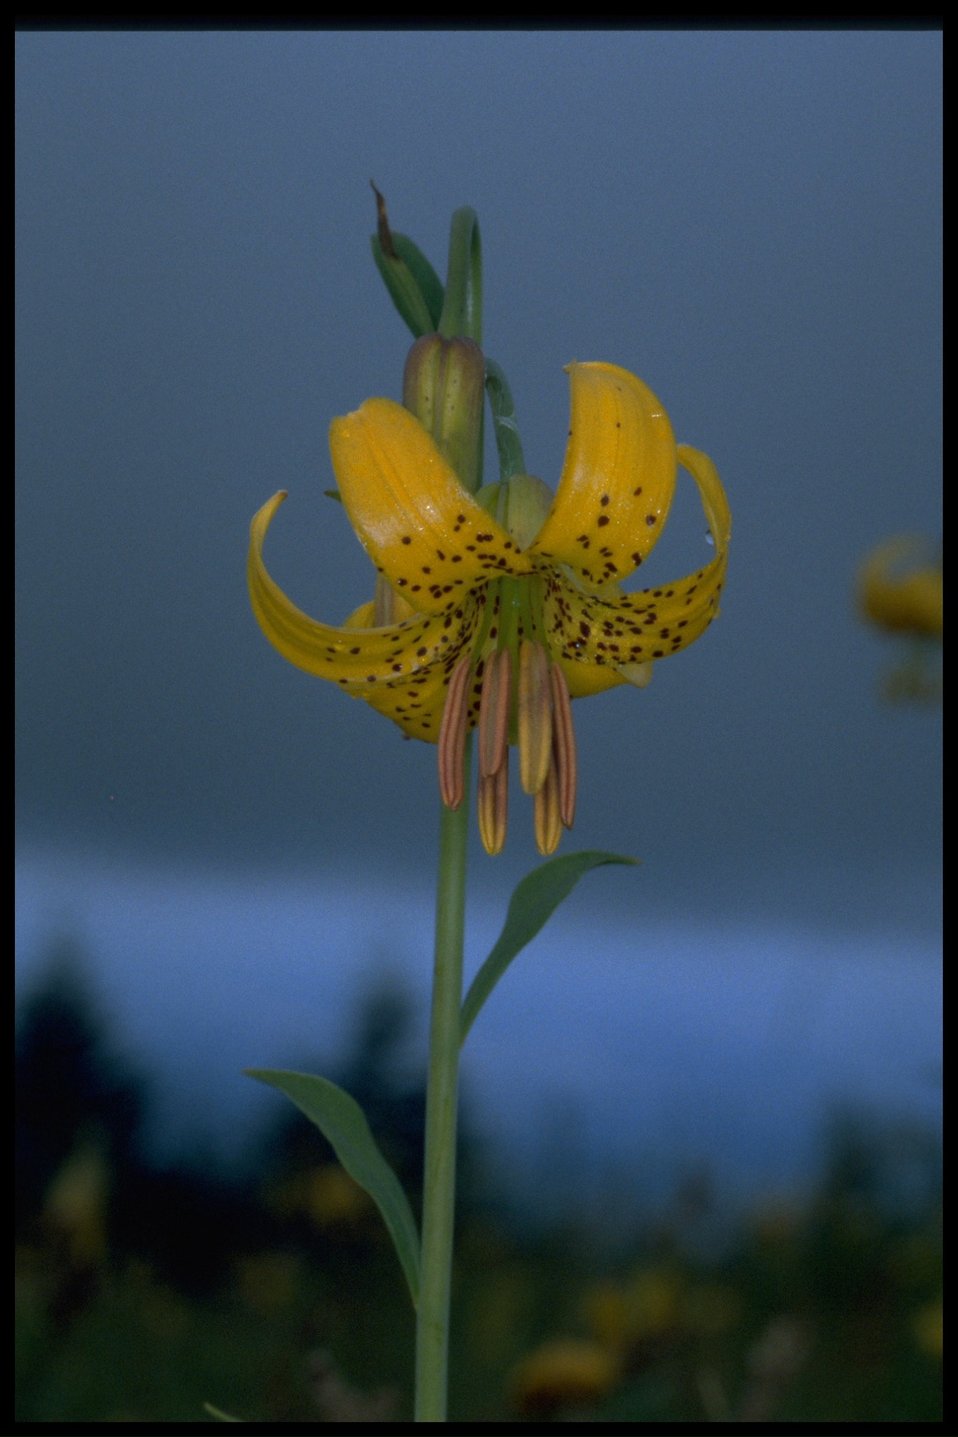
Medium shot of tiger lily, Lilium columbianum.